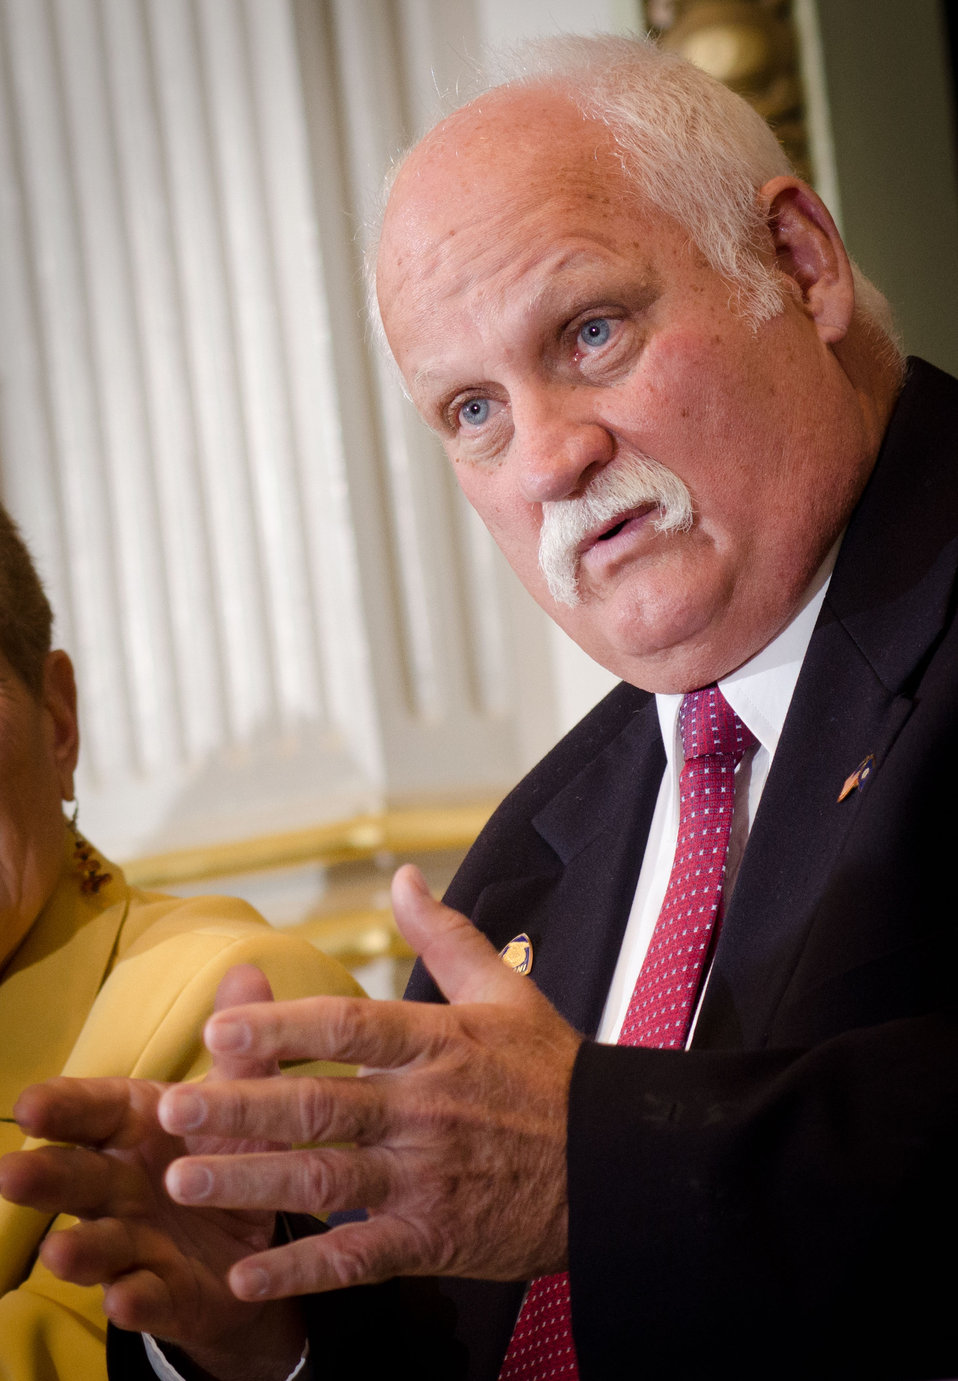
Kentucky FFA Leadership Training Center Director Dr. Pete Drisbach speaks at the Champions of Change Recognition event in the Indian Treaty Room at the Executive Office Building in Washington, D.C. on Tuesday, Oct. 9, 2012. The Champions of Change program was created to honor ordinary Americans doing great work in their communities. Each week, a different sector is highlighted and groups of Champions, ranging from educators to entrepreneurs to community leaders, are recognized for the work they are doing to serve and strengthen their communities.